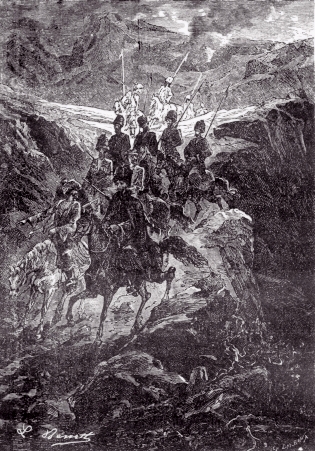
An illustration from the novel 'Michael Strogoff: The Courier of the Czar' by Jules Verne drawn by Jules Férat. Polski: Ilustracja powieści Juliusza Verne'a 'Michał Strogow, kurier carski' autorstwa Julesa Férata. Français : 'Michel Strogoff. Le courier du tzar', Jules Férat.